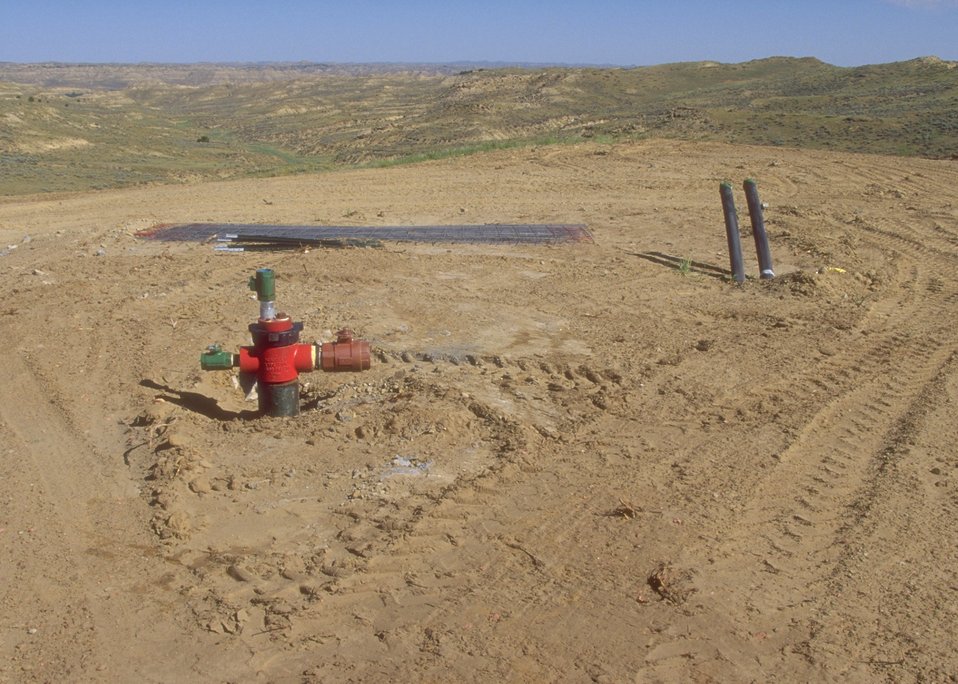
Construction for coal bed methane development, Buffalo Field Office.